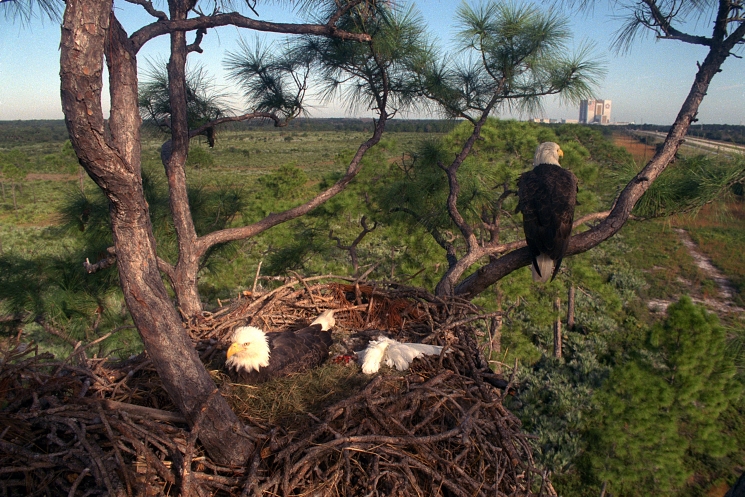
The Eagle Has Landed

While our National Laboratories and other research centers across the U.S. house some of the nation's most advanced technology and research facilities, the Department of Energy is also working to preserve the wildlife and ecosystems surrounding these locations. This image from 1992 is from another remarkable science and innovation center, NASA’s Kennedy Space Center. This photo is in a series of remarkable shots documenting the daily lives of two of the most famous residents: the southern bald eagles that inhabit an enormous nest on the Kennedy Parkway North. Each fall, eagles take up residence in the nest to breed a new generation. That year, a rare and unique event was captured by a camera hidden in the tree -- a second clutch of eggs was laid, even though a healthy eaglet was born just one month earlier. While it is impossible to determine if it is the same eagles returning each year, the continued tolerance shown by this pair to the human presence seems to indicate that they are the same couple.